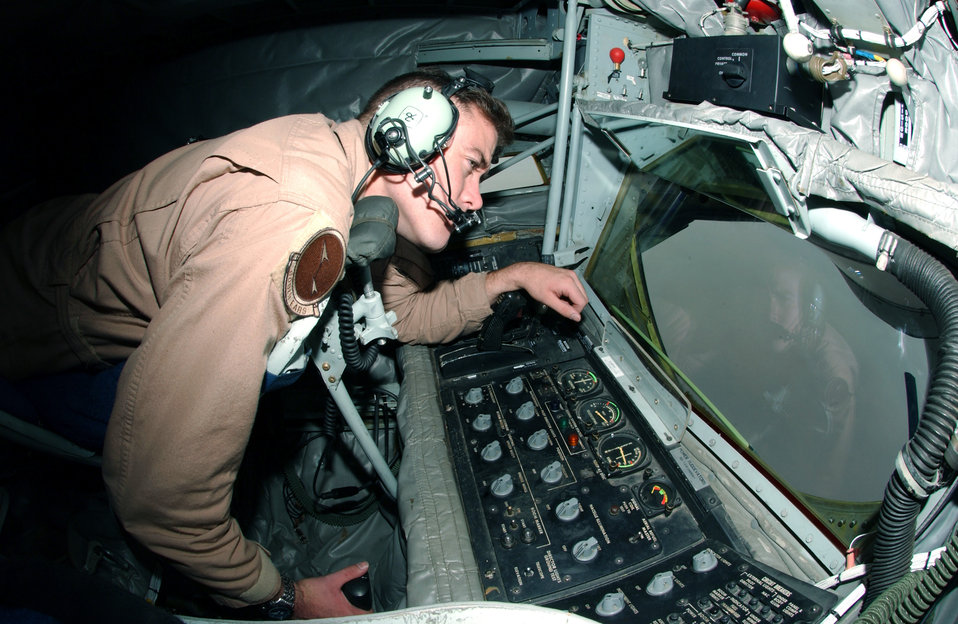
Fill'er up

SOUTHWEST ASIA -- Senior Airman Scott Scurlock looks out the rear window of a KC-135 Stratotanker for inbound aircraft preparing to refuel. Airman Scurlock is assigned to the 908th Expeditionary Air Refueling Squadron at a forward deployed location.